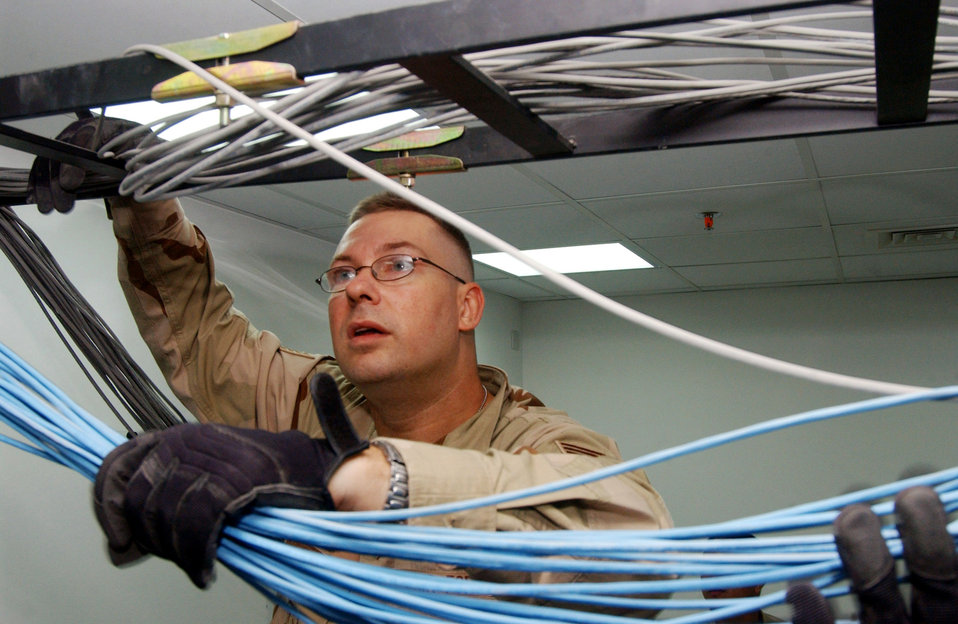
New hospital at Balad

Staff Sgt. Robert Luna strings data communication cables in the new Air Force Theater Hospital being built at Balad Air Base, Iraq. The new hospital is replacing the old tent structure. Throughout the transition, Airmen have pulled more than 50,000 feet of computer cables; set up computers, phones and paging systems and more. The new hospital is scheduled to open Aug. 3. Sergeant Luna is with the 332nd Expeditionary Medical Support Squadron.